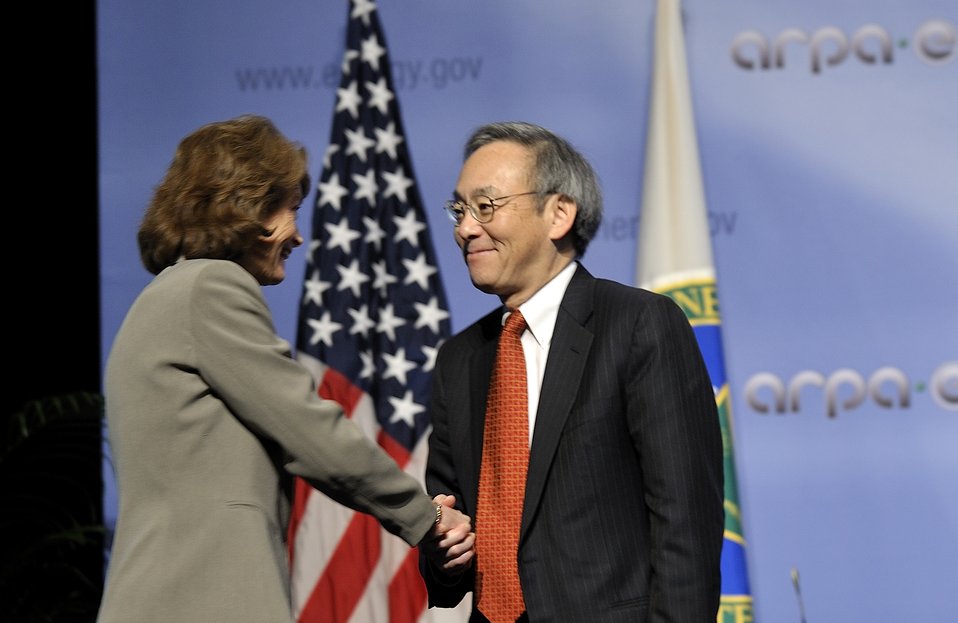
ARPA-E Energy Innovation Summit 2011, 38 of 83

Steven Chu, Secretary, United States Department of Energy and Senator Lisa Murkowski (I-AK).